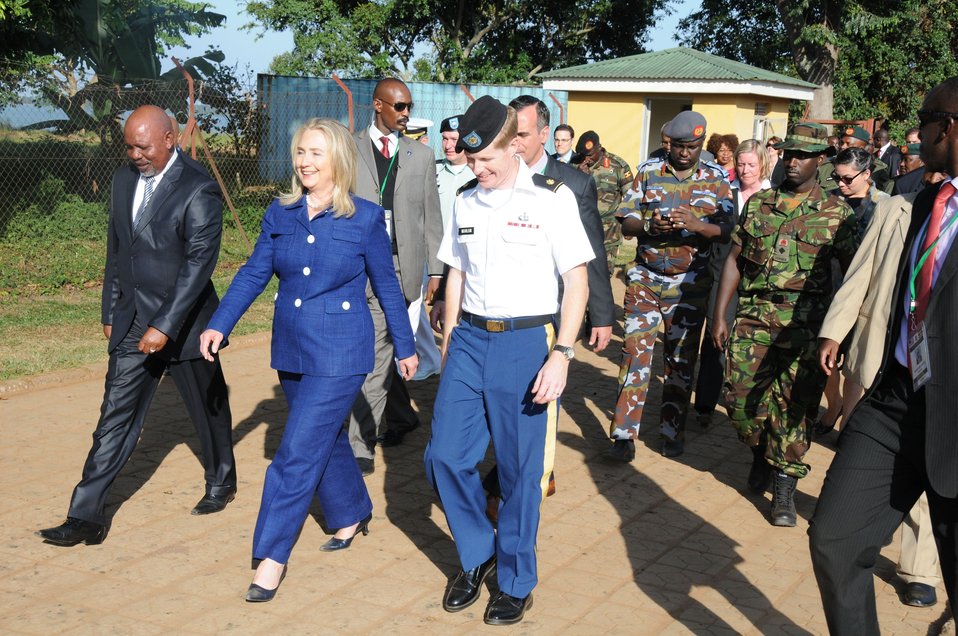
Secretary Clinton Walks With Minister of State Ondongo and U.S. Army Major Nicholson

U.S. Secretary of State Hillary Rodham Clinton at the Uganda People’s Defense Force (UPDF) Kasneyi military base with Minister of State for Defense Jeje Ondongo and U.S. Army Major Jason “Brad” Nicholson in Kampala, Uganda on August 3, 2012.